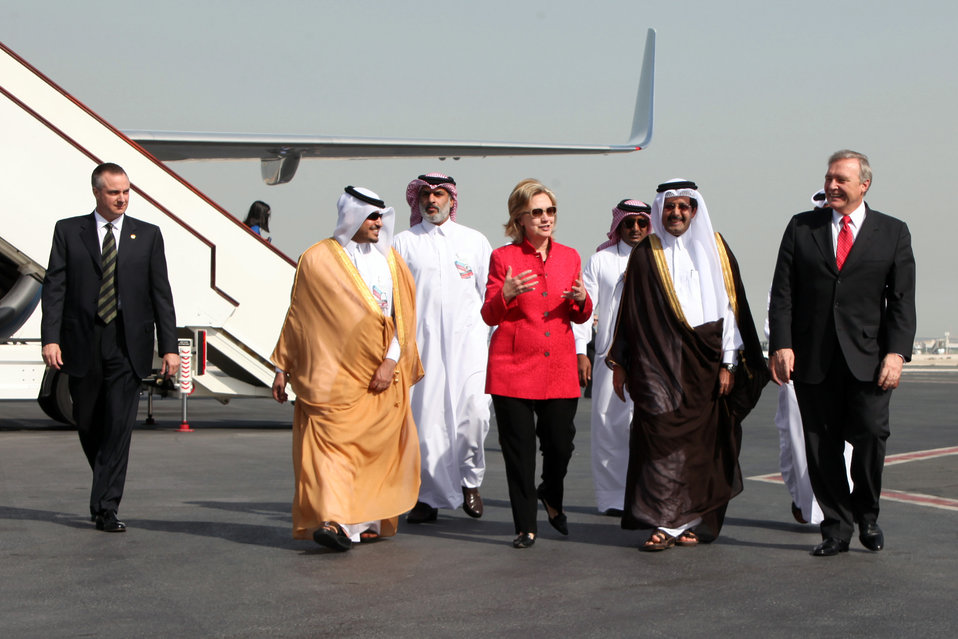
Secretary Clinton Travels to Qatar and Saudi Arabia

From right to left: US Ambassador to Qatar Joseph Lebaron, Ambassador Ali Al-Hajri, Qatar Ambassador to the United States, U.S. Secretary of State Hillary Rodham Clinton, and Ambassador Mohammed bin Khater Al-Khater Director of the Department of Protocol in Doha, Qatar February 14, 2010.